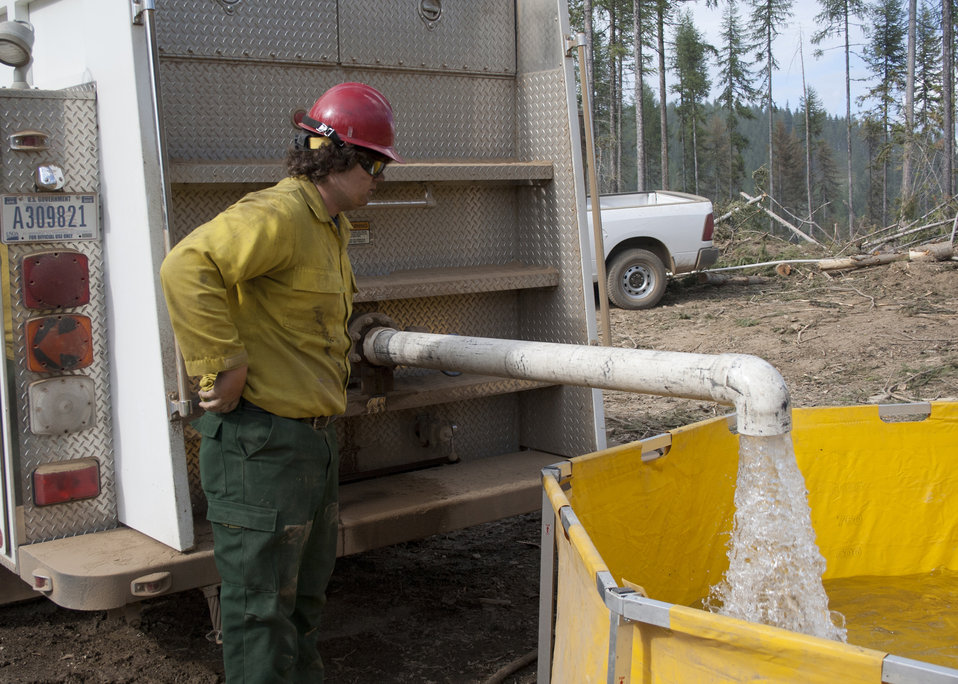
Firefighters supported by three fire engines, two helicopters, two water tenders, a dozer and an air tanker battled to contain the 90 acre Rogers Fire located on Mt. Rogers five miles west of Aladdin, WA on the Colville National Forest. Firefighters worked under adverse conditions with steep terrain and gusting winds to reduce the loss of timber and protect the Rogers Mountain Trail. The Rogers Fire began on Aug. 9, 2011 and was controlled by Aug. 19, 2011 with mop up crews ensuring that no flare-ups occurred. Colville National Forest has 1.1 million acres in northeastern Washington and includes the Kettle River, Selkirk Mountain ranges, and the upper reaches of the Columbia River.